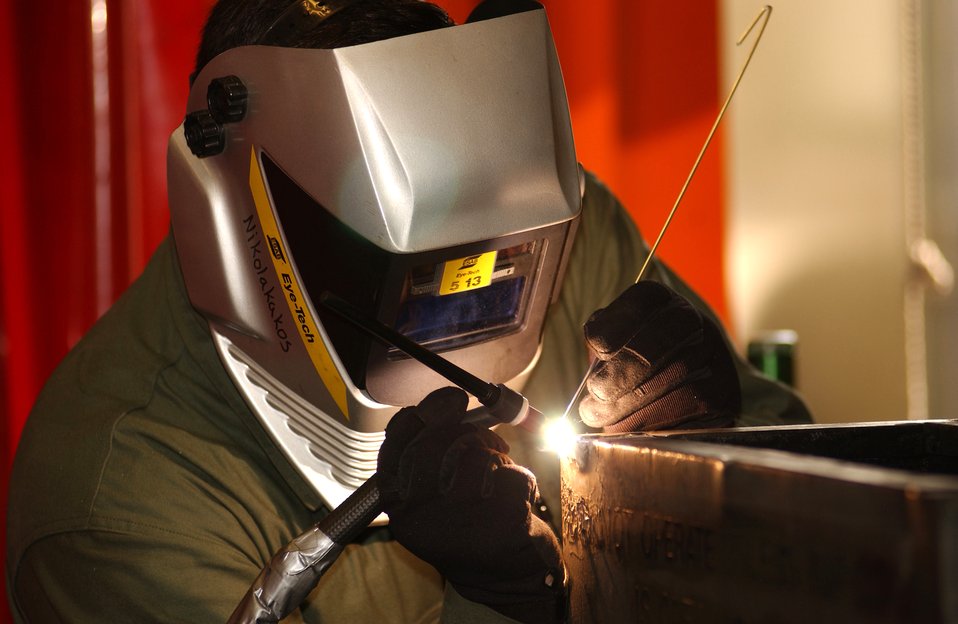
Cooling down

ROYAL AIR FORCE LAKENHEATH, England -- Tech. Sgt. Pete Nikolakakos welds equipment used for cooling down the computers and avionics equipment on F-15E Strike Eagles here July 14. Sergeant Nikolakakos is assigned to 48th Equipment Maintenance Squadron.